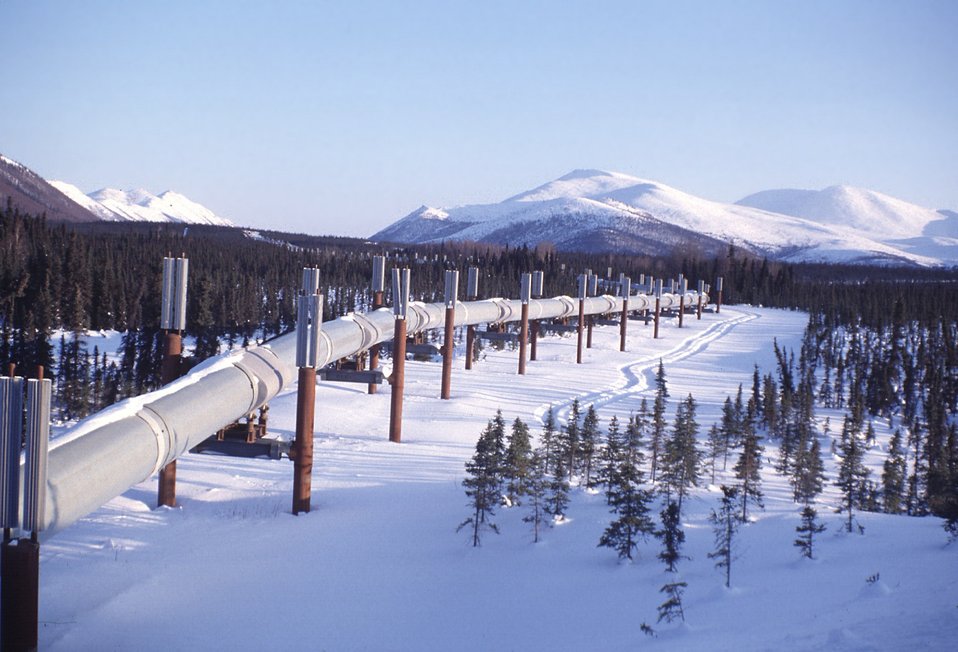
Trans-Alaska Pipeline, Dalton Highway, winter